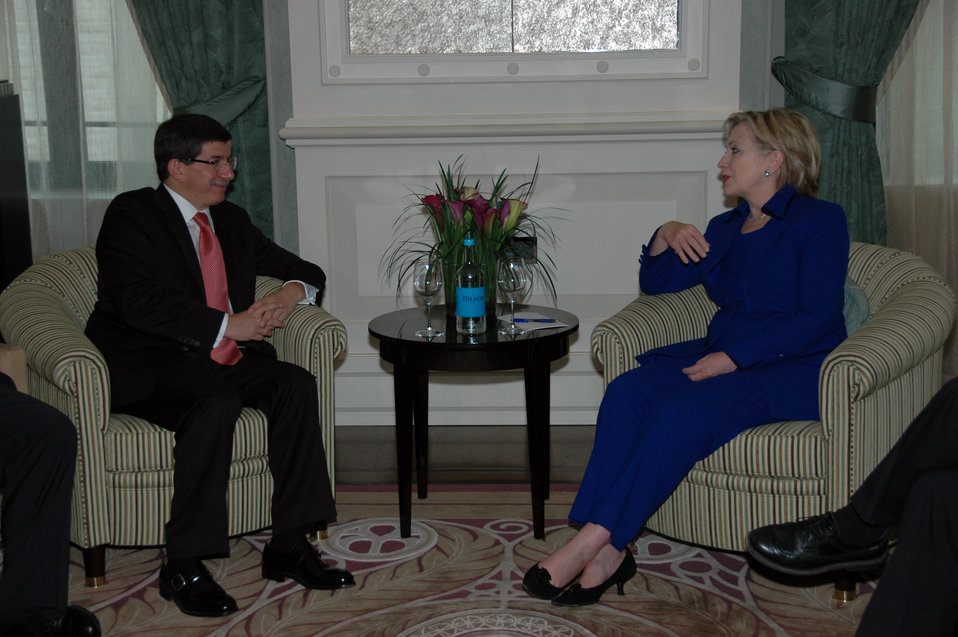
Secretary Clinton Meets With Turkish Foreign Minister

U.S. Secretary of State Hillary Rodham Clinton with Turkish Foreign Minister Ahmet Davutoglu in Zurich, Switzerland October 9, 2009.